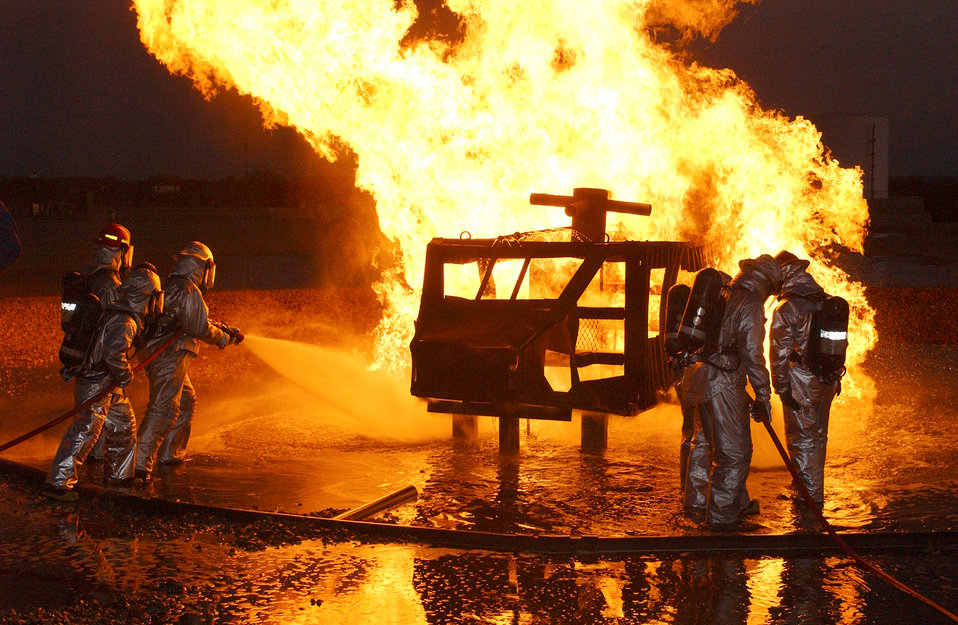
Ablaze

GOODFELLOW AIR FORCE BASE, Texas -- Students at the Air Force Fire Academy here train to properly extinguish a helicopter fire.